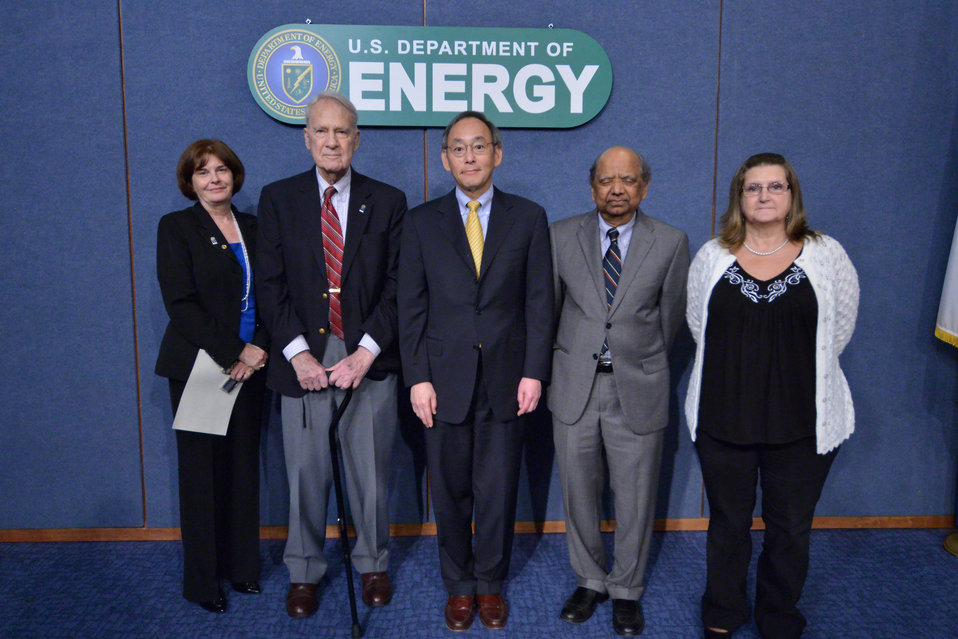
1 CI

Charter employees from the Office of Congressional and Intergovernmental Affairs with Secretary Steven Chu, current Secretary of Energy, and Secretary James Schlesinger, first Secretary of Energy.